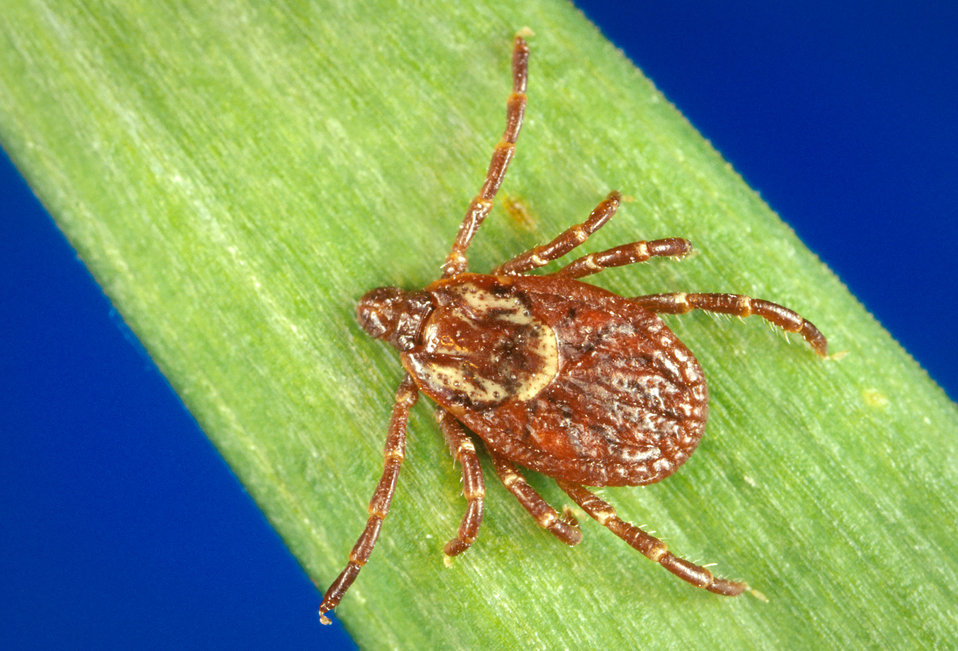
Female Dermacentor variabilis, American dog tick